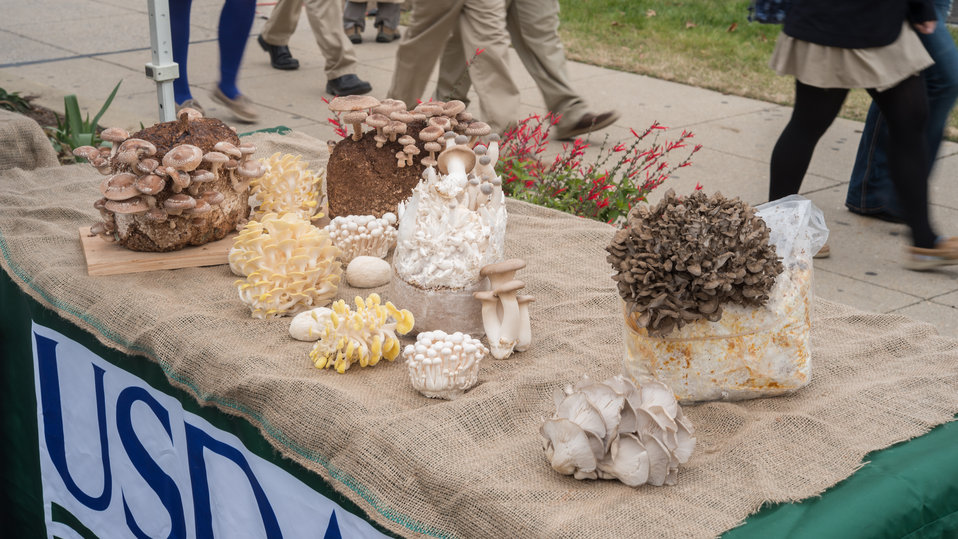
(Left - right) Shitake mushrooms growing on sawdust and cereal log, yellow oyster (yellow and white), pom pom (egg shaped), beech (small cap), royal trumpet (large stem), maitake (dark brown on plastic wrapped growing log, and oyster (light gray) mushrooms Yellow oyster (yellow and white), pom pom (egg shaped), beach (small cap), royal trumpet (large stem), maitake (dark brown on plastic wrapped growing log, and oyster (light gray) mushrooms on display at the U.S. Department of Agriculture (USDA) farmers markets and Harvest Festival at the USDA Whitten Building east parking lot in Washington, DC, on Friday, November 22, 2013.